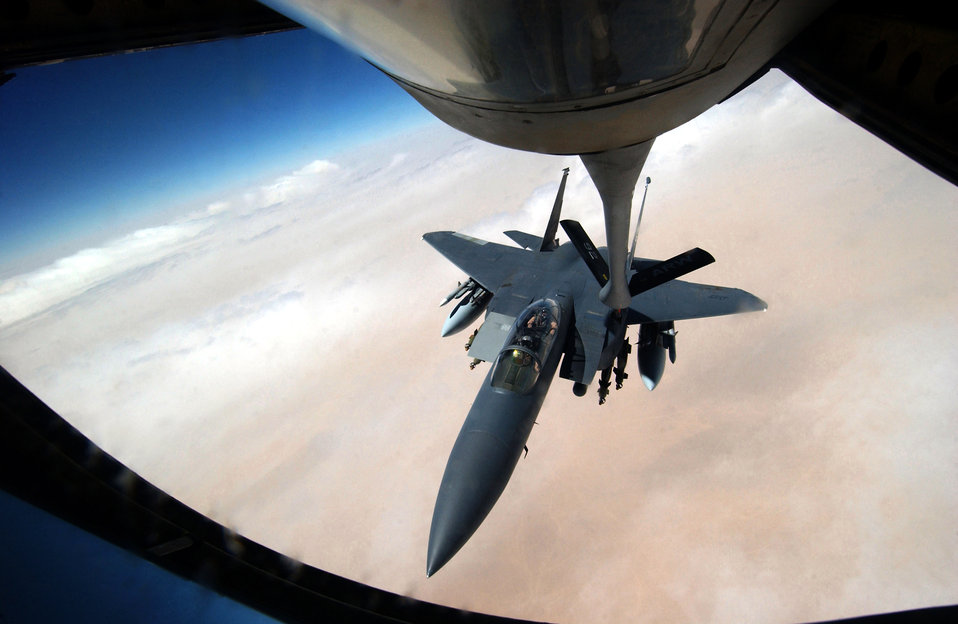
Fueling up an Eagle

OVER IRAQ -- An F-15E Strike Eagle from the 494th Fighter Squadron at Royal Air Force Lakenheath, England, is refueled by a KC-135 Stratotanker from the 340th Expeditionary Air Refueling Squadron during a combat sortie supporting Operation Iraqi Freedom on April 22.